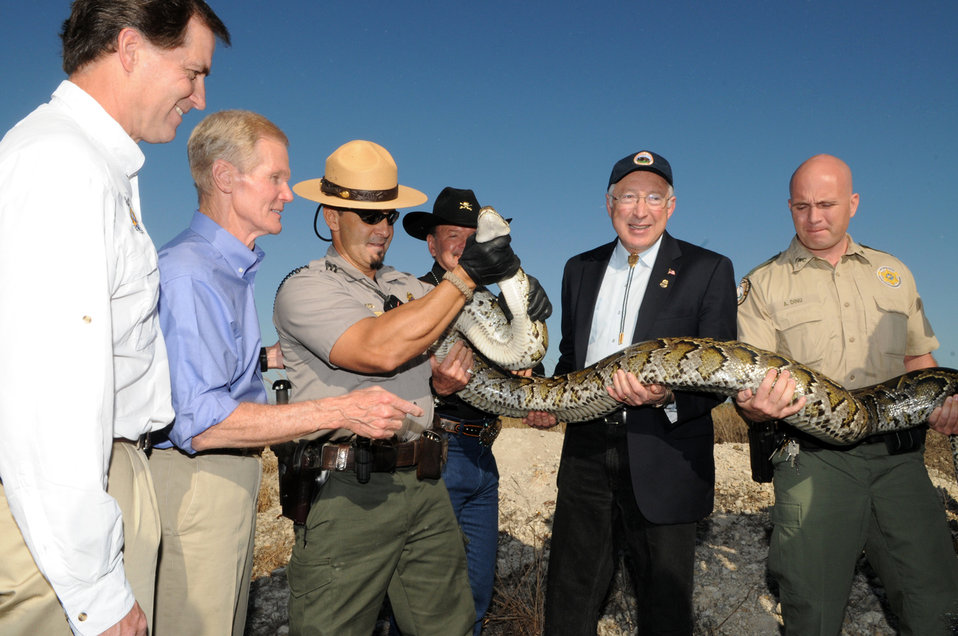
Group shot of Secretary Salazar, Senator Ben Nelson, and Dan Ashe with Python